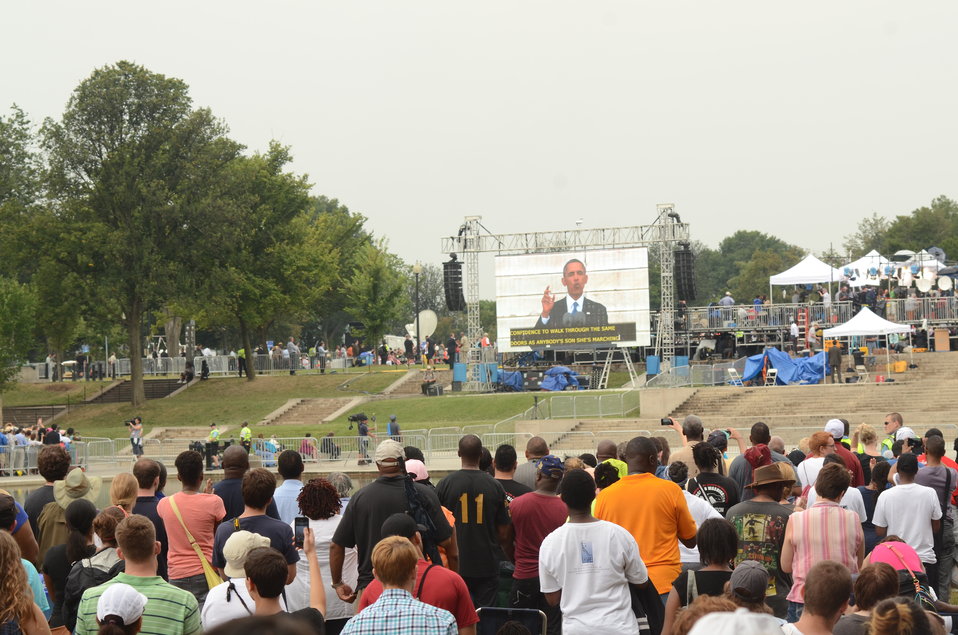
President Barack Obama speaks to marchers at the Lincoln Memorial for the March on Washington, D.C., on Wed., Aug. 28, 2013.